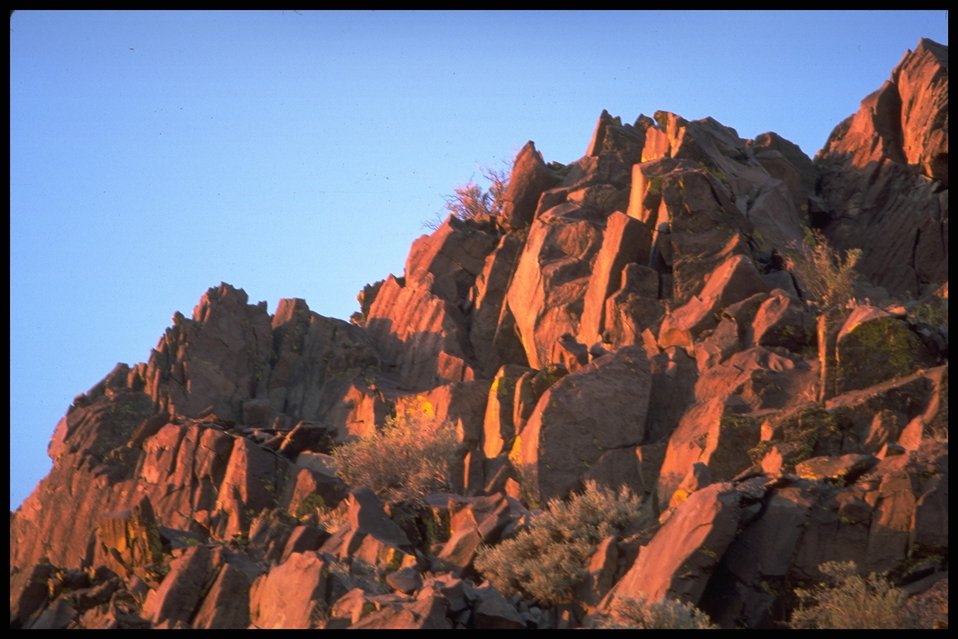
Stunning view of rock formation. Lakeview District.